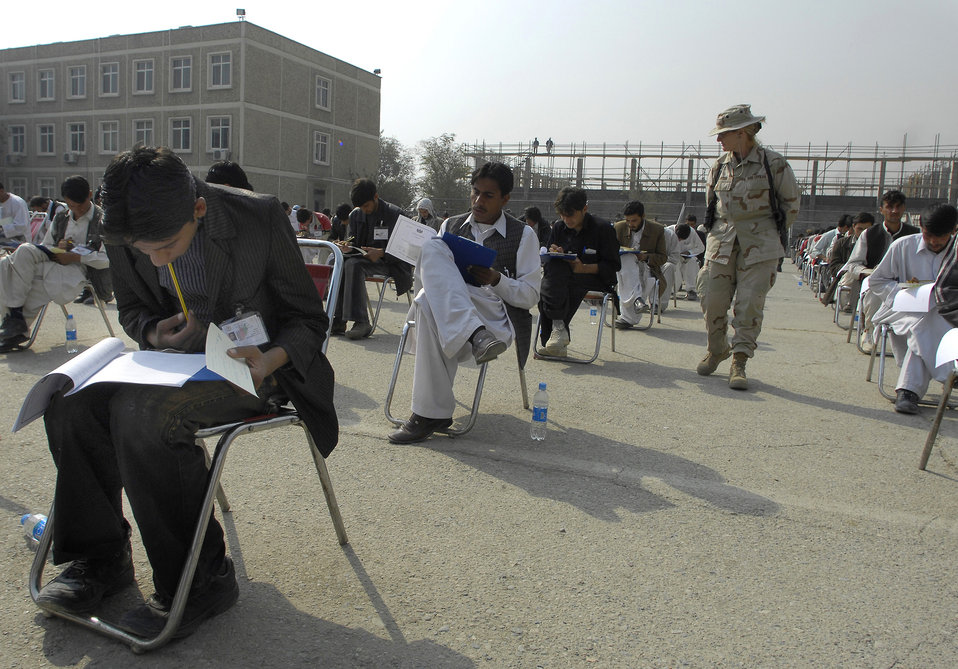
Airmen, Soldiers help establish military academy

Department of Defense Civilian Sally Carter walks through the isles as perspective cadets take the Afghan college entrance exam for the Afghan National Army Academy, Kabul, Afghanistan, Oct. 25. There are more than 1,800 perspective cadets here, all hoping to be one of the approximately 300 chosen for the new freshman class. The exam makes up 80 percent of their final admissions score. Ms. Carter is the english language training coordinator for Afghanistan.